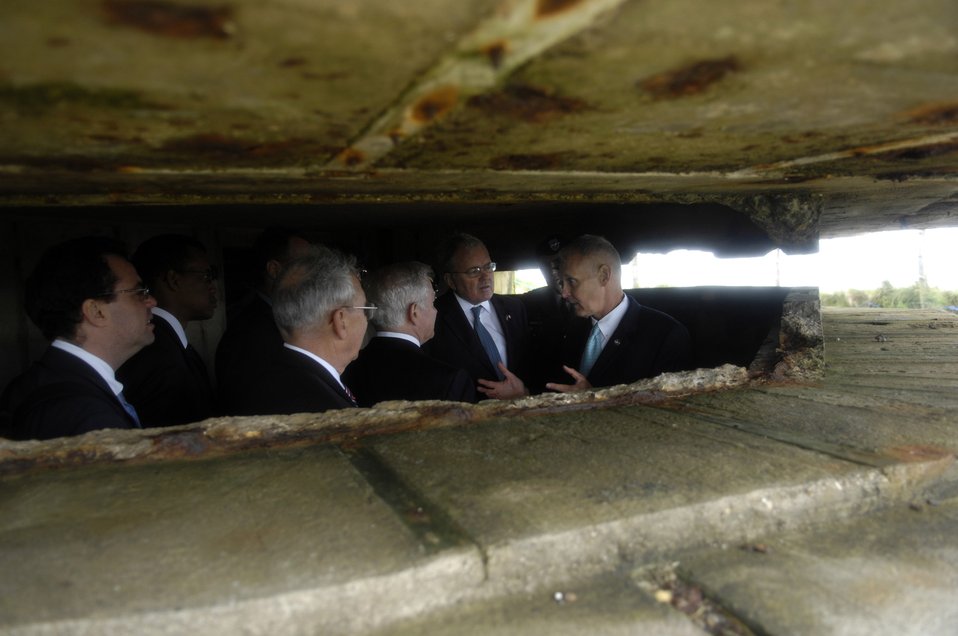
Defense secretary, servicemembers reflect on D-Day heroism

Secretary of Defense Robert M. Gates tours a German bunker at Point-du-Hoc on the 63rd Anniversary of D-Day June 6 in Normandy, France. During World War II, rangers assulted the beaches at Point-du-Hoc and scaled the 100-meter-high cliffs to defeat the enemy for the cause of freedom.